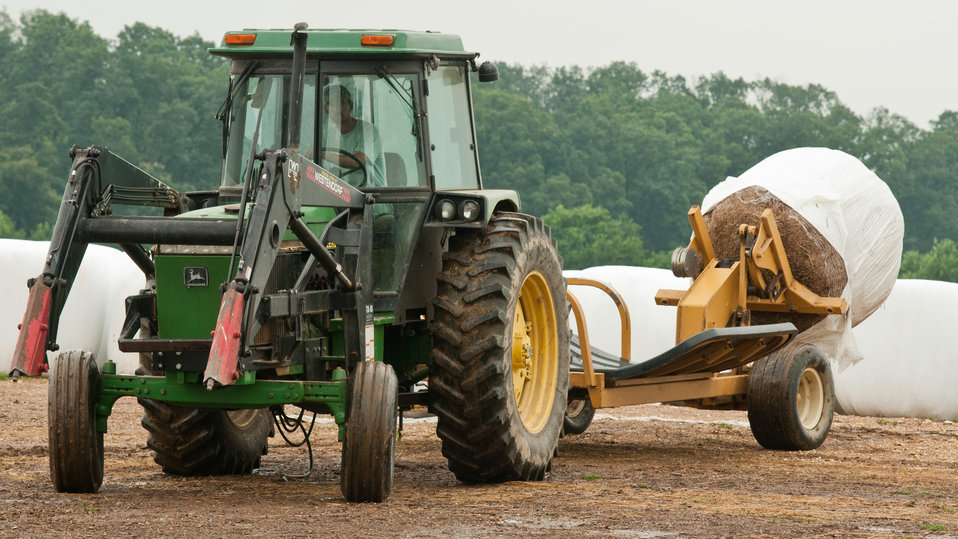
Farm Assistant George Kloph uses a tractor and silage bale spreader to lift and feed the herds of Black Angus cattle at Nick’s Organic Farm, owned by Nick Maravell, in Adamstown, MD on Friday, July 12, 2013. The white plastic wrapped bales of pasture grass and alfalfa have been fermenting for months to create sweet silage that stores well and can be used to feed cattle at varying amount all year long. The fermentation process sweetens the taste and increases the vitamin levels in it. The farm produces Black Angus beef, chicken, turkey, eggs, hay, soybeans, corn, alfalfa, orchard grass, rye; and other crops. The cattle are 100% grass-fed receiving certified organic pasture, certified organic hay (in winter), water and mineral salts mixed with sea kelp. The cattle are not fed hormones, antibiotics or animal products. Poultry feed from grain is ground from organic grain. The poultry also graze on organic pastures. The farm has conducted on-farm research with federal, state and non-profit agencies to refine organic practices. An organization such as the U.S. Department of Agriculture (USDA) Agricultural Research Service (ARS) center in Beltsville has been able to conduct research to improve organic crops and to breed and manage the cattle so that they have.